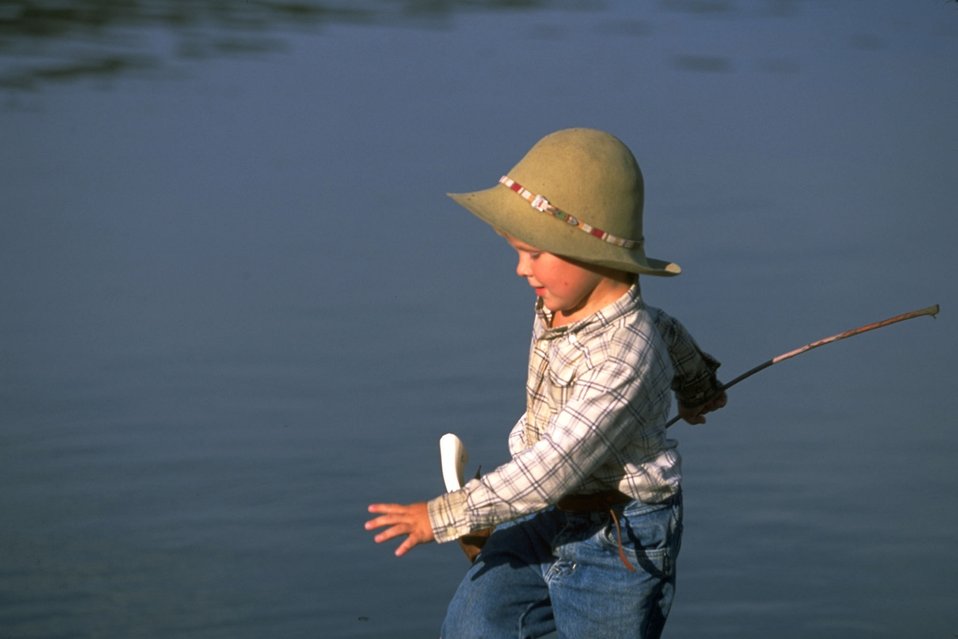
Children at Kipp Recreation Area